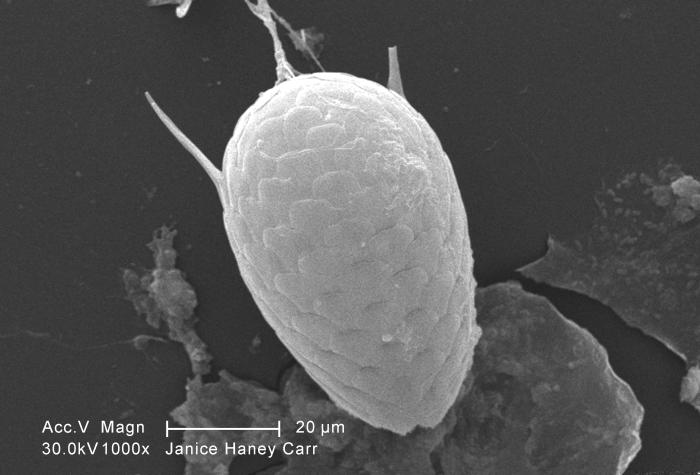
Under a moderate magnification of 1000X, this scanning electron micrograph (SEM) of an untreated water specimen extracted from a wild stream mainly used to control flooding during inclement weather, revealed the presence of unidentified organisms, which included bacteria, protozoa, and algae. In this particular view, a single copepod-like microorganism was seen occupying the field of view, which seemed to be encased in an outer shell of armour-like plates, or scales. If you look closely, you'll also notice the small grouping of bacteria, which had become enmeshed in a patch of biofilm. See PHIL 11787 for a colorized version of this image.